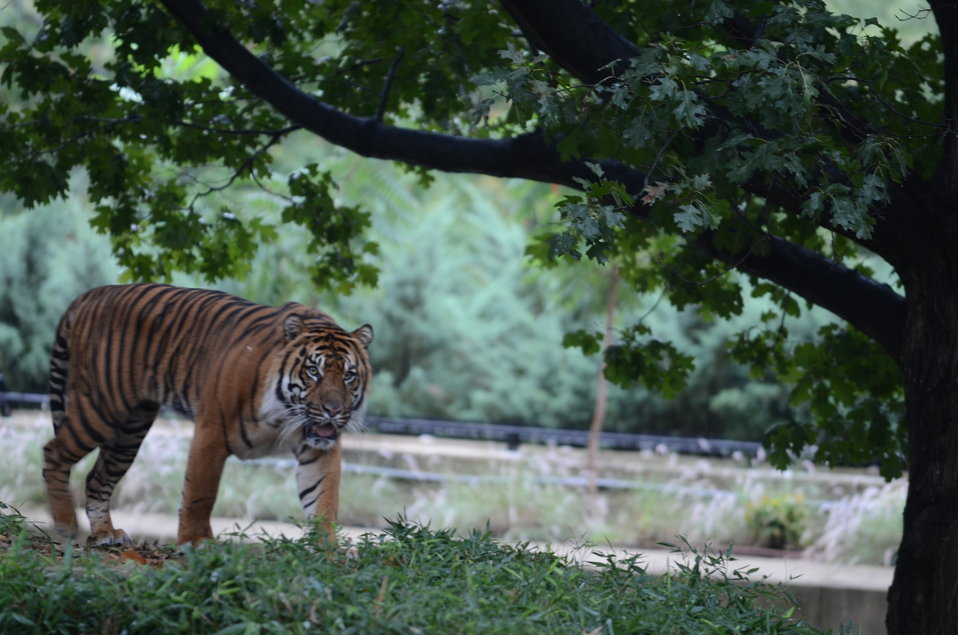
Save Vanishing Species Stamp First Day of Issue